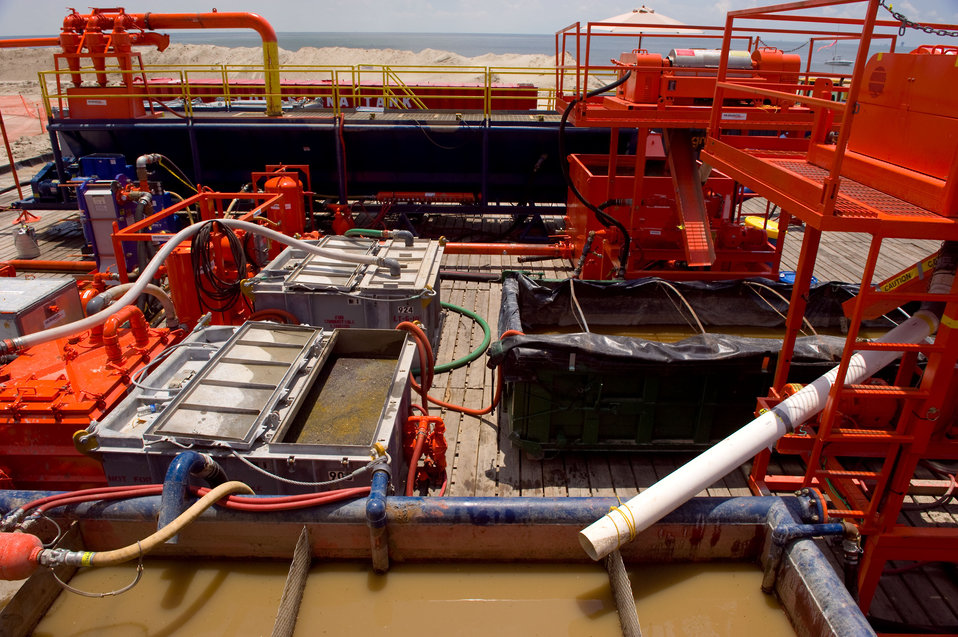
August 7, Another view of the sand washing process

Sand washing in Grand Isle, La.